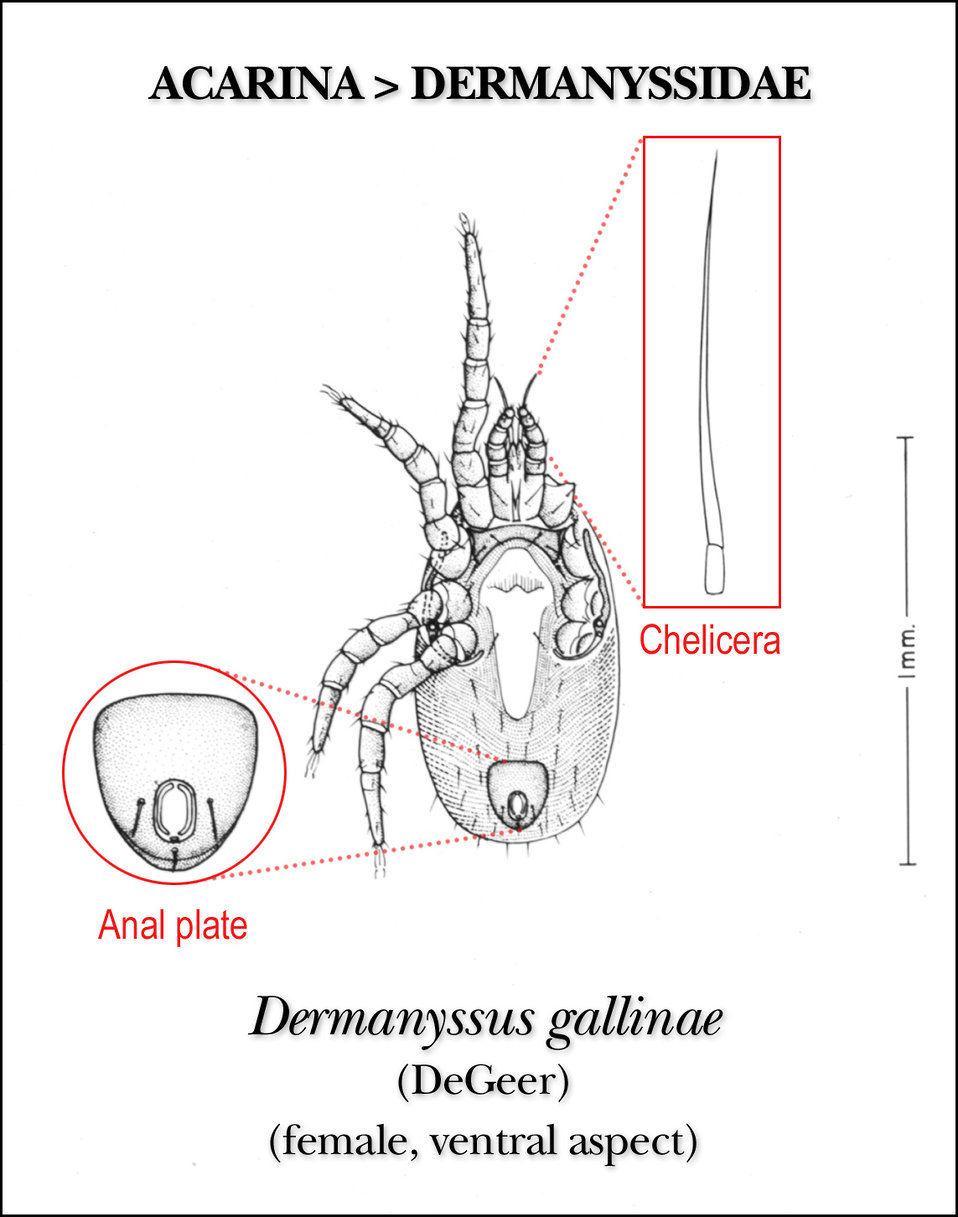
This illustration of a female 'red mite', Dermanyssus gallinae, reveals the insect's ventral morphologic characteristics.